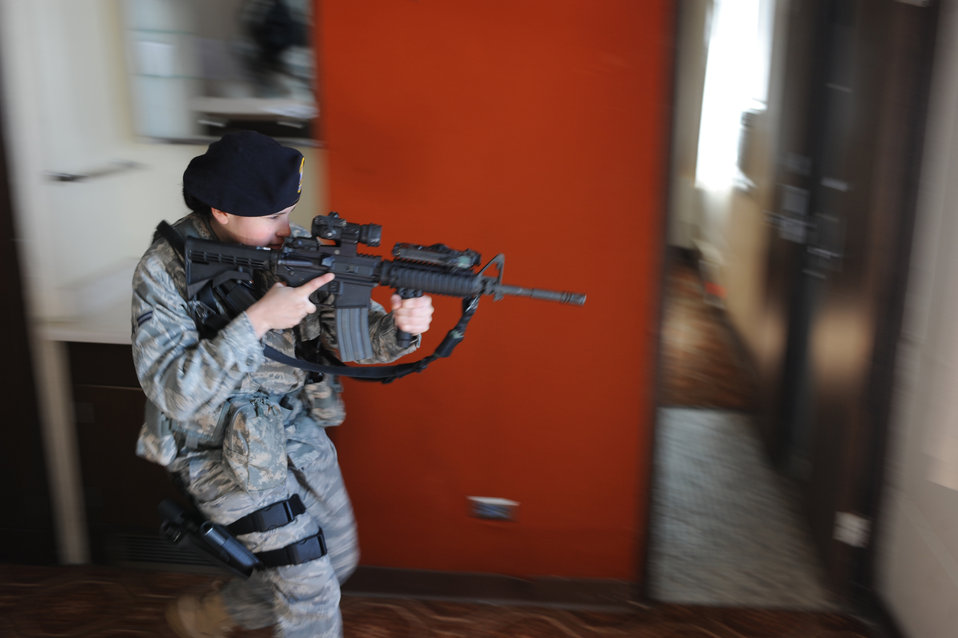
All clear!

Airman 1st Class Elizabeth Bolanos performs a dynamic entry with her M-4 carbine to clear a room with potential